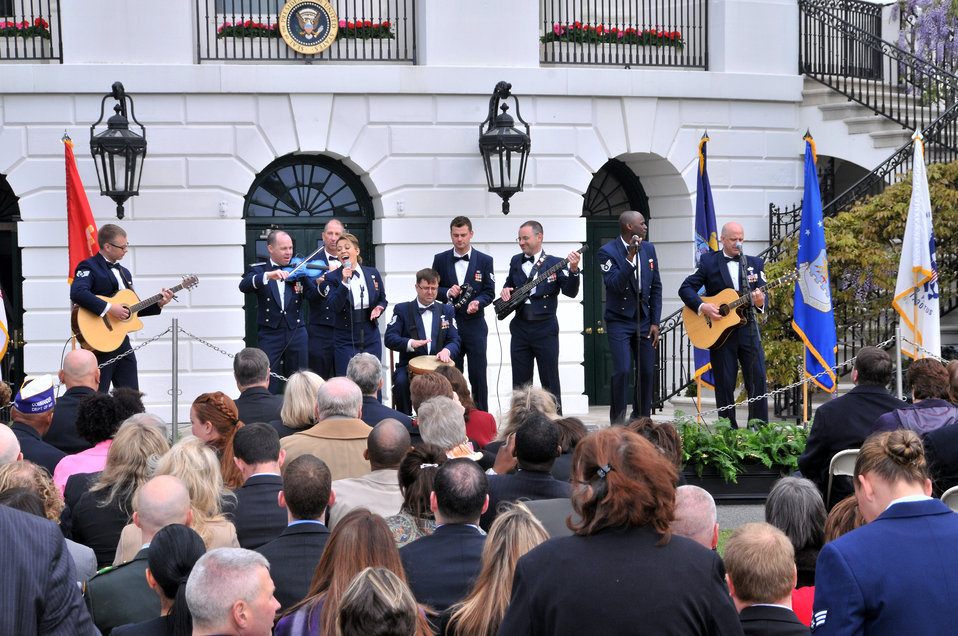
Band plays at White House

Sidewinder band members Air Force Staff Sgt. Sean Navarro; Staff Sgt. Ransom Miller; Staff Sgt. Devin LaRue; Staff Sgt. Brian Owens; Tech. Sgt. John Cavanaugh; Staff Sgt. Toby Callaway; Tech. Sgt. Kevin Maret; and Tech. Sgt. Joey Castilleja, perform at the White House on the South Lawn April 11, 2012. Sindwinder, the St. Louis, Mo.-based 571st Missouri Air National Guard Band made famous by their YouTube video performance of Adele's